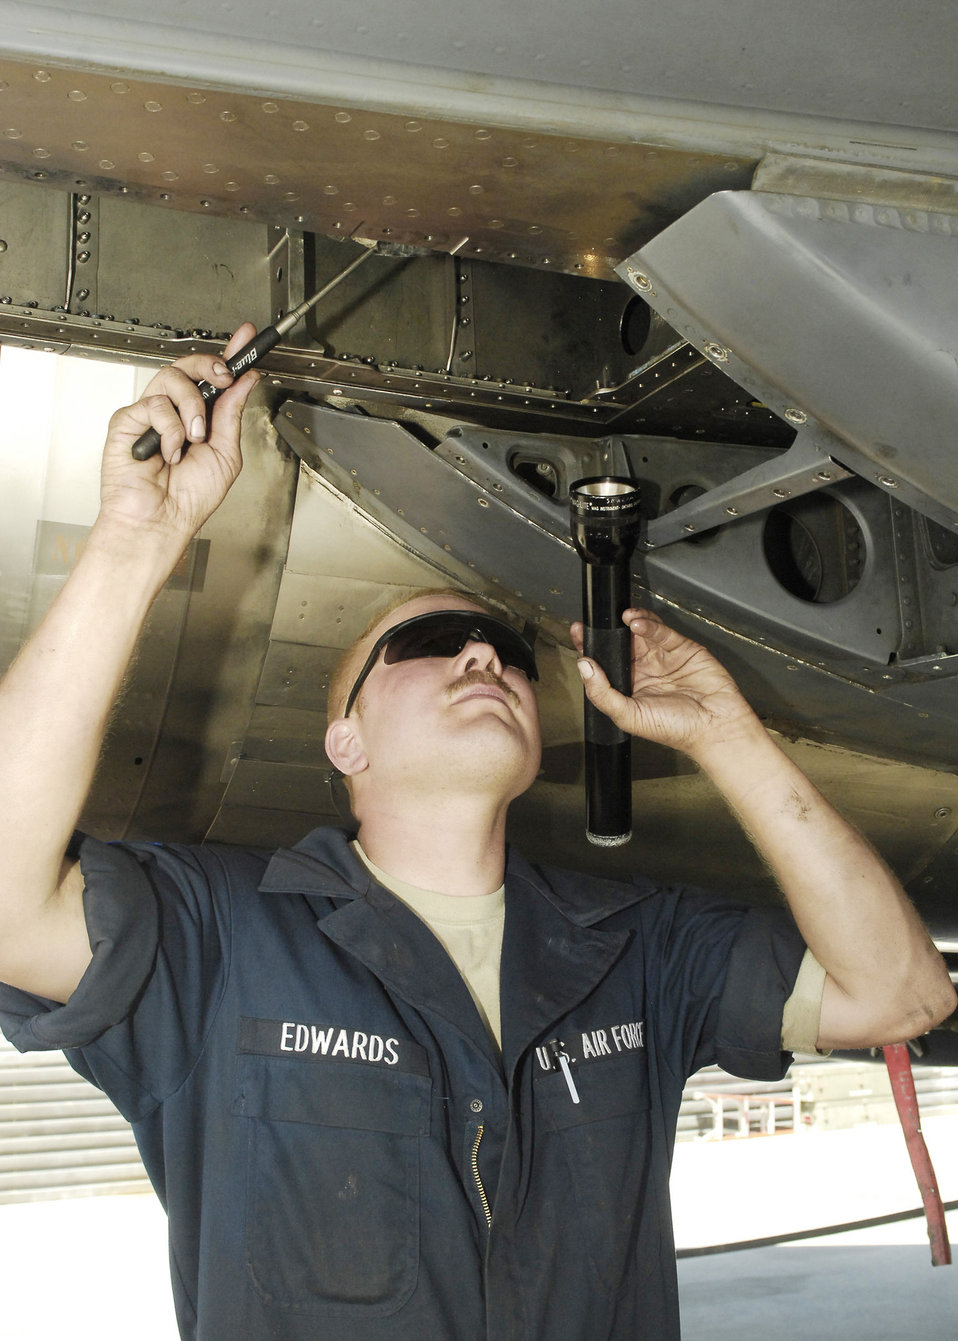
Keeping the Strike Eagles flying

Staff Sgt. Christopher Edwards, a crew chief from the 336th Aircraft Maintenance Squadron at Bagram Airfield, Afghanistan, replaces an actuator on an F-15E Strike Eagle. Sergeant Edwards is deployed from Seymour Johnson Air Force Base, N.C. Strike Eagles launch around the clock in support of coalition forces.